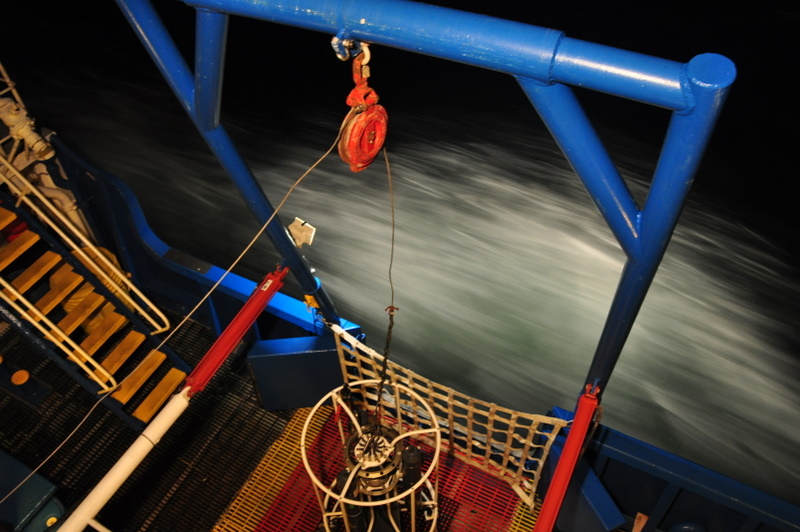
July 2009, On the move to the next station

Continuing to collect water samples along the northernmost portion of Penobscot Bay through the night.